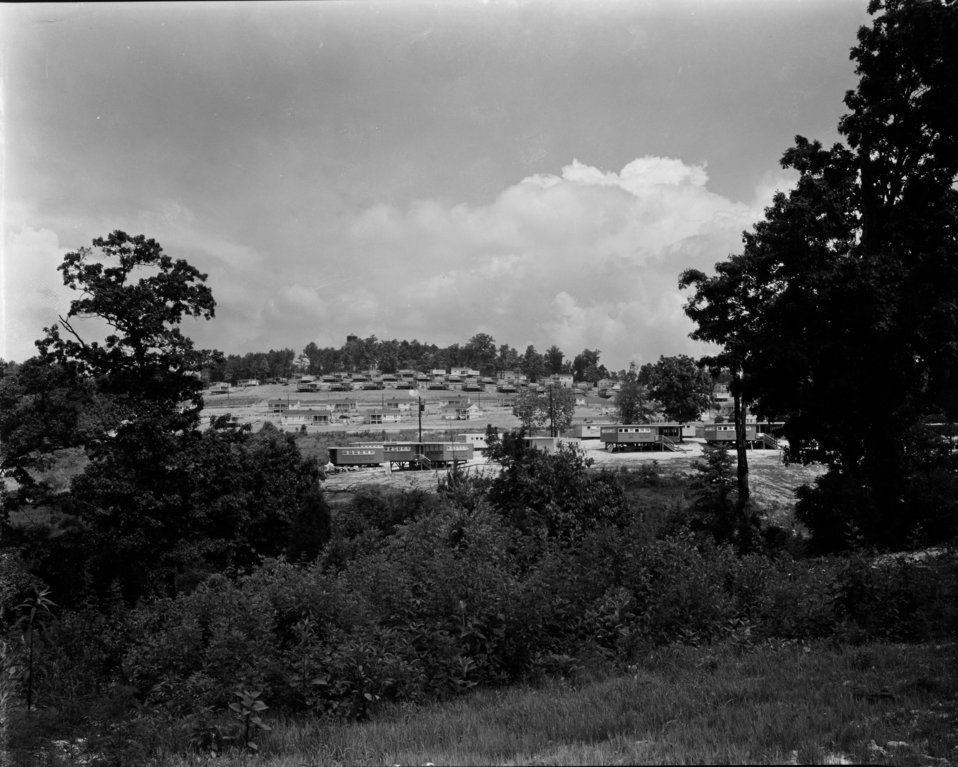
Housing at Oak Ridge